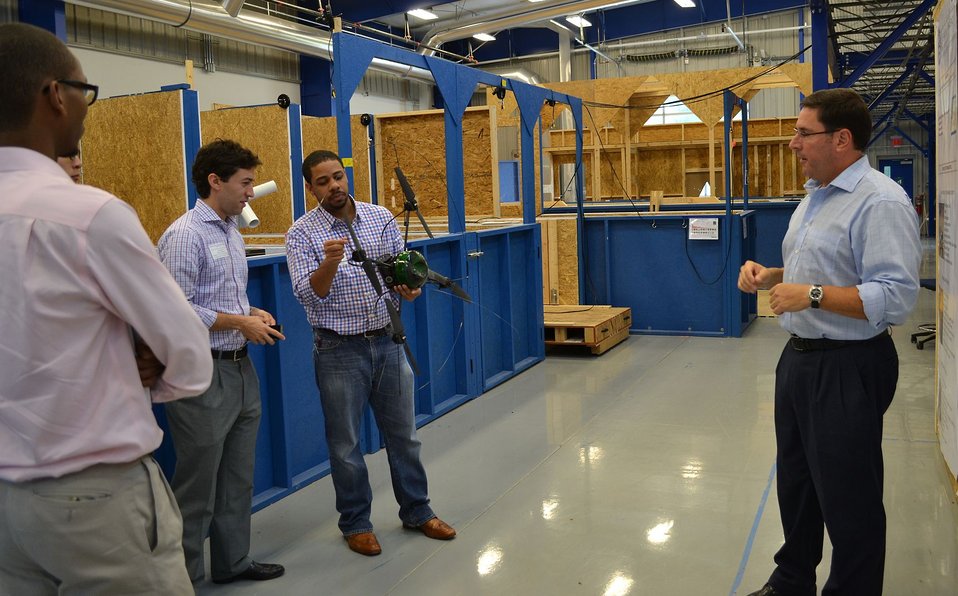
Committee on Commerce, Science, and Transportation Tour #3

Adam Jacoff (Right) of the NIST Engineering Lab Intelligent Systems Division briefs staffers from the Senate Committee on Commerce, Science, and Transportation on standard test methods research to measure robot mobility/maneuvering, manipulation, energy/power, sensing, radio communication, human-robot interaction, logistics, and safety in the new NIST Robotic Test Facility.